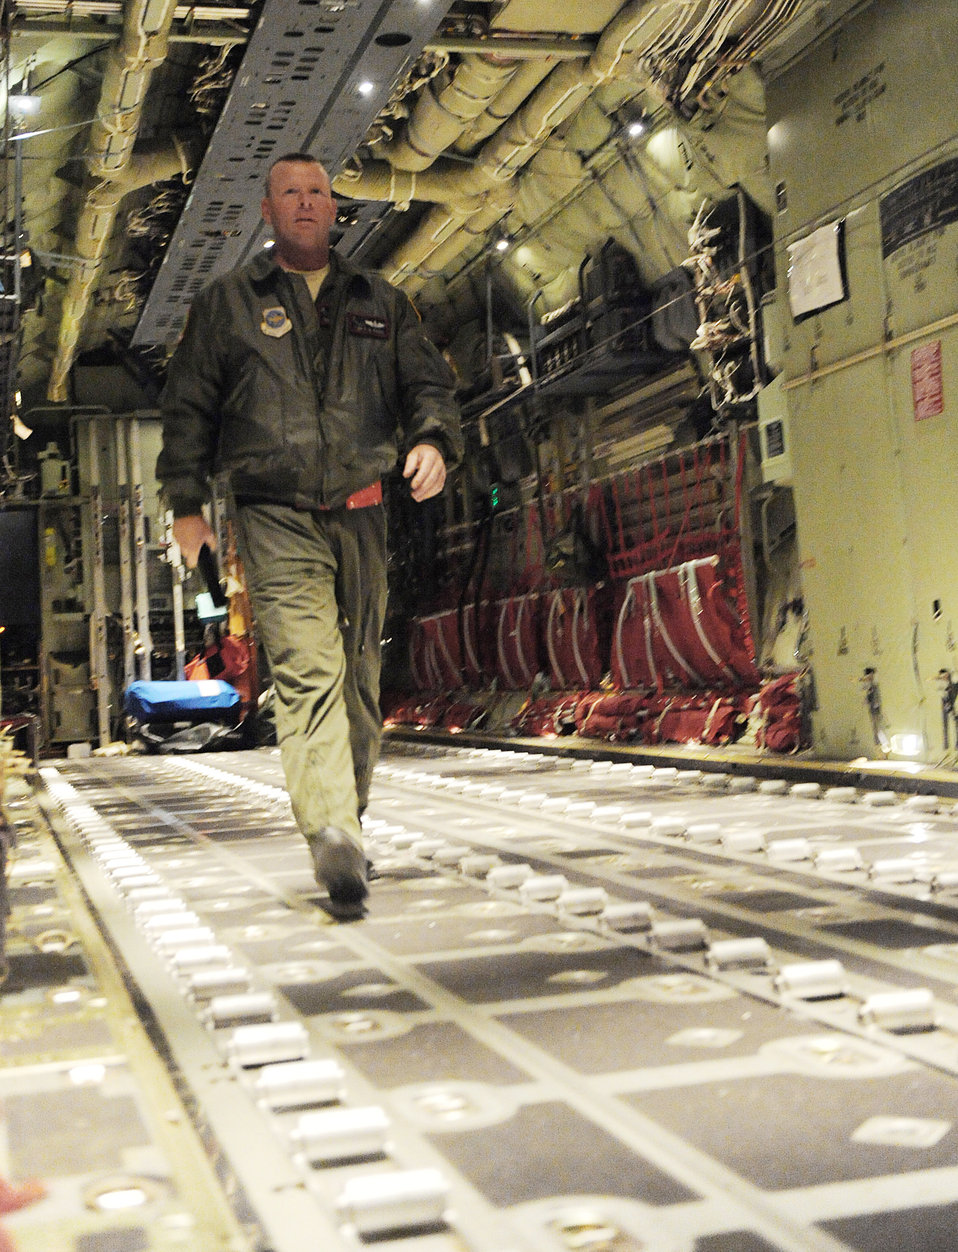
Little Rock AFB crew gets supplies on ground

Tech. Sgt. Charles Moore, 41st Airlift Squadron loadmaster, walks to the back of a C-130J Super Hercules during a pre-flight check Jan. 13, 2010, before the aircraft's humanitarian mission to support the Haitian relief effort. The aircraft launched from Little Rock Air Force Base, Ark., near midnight Jan. 13, loaded personnel and equipment before dawn at Biloxi-Gulfport International Airport, Miss., and delivered them to the Toussaint L'Ouverture International Airport in Haiti, the morning of Jan. 14.